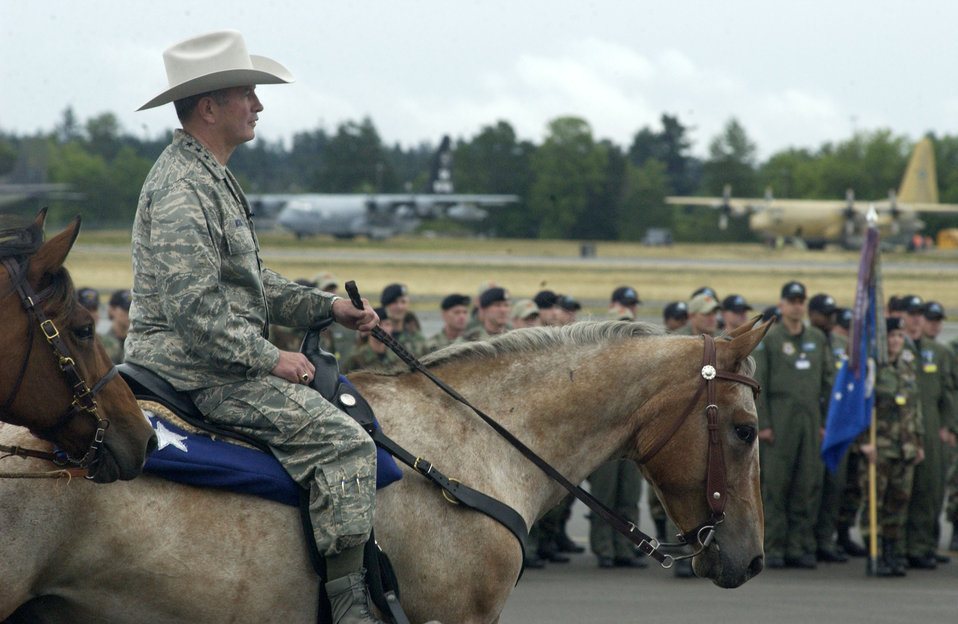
AMC commander shares passion for Rodeo

Gen. Duncan J. McNabb rides into the Air Mobility Command Rodeo 2007 opening ceremony July 22 at McChord Air Force Base, Wash. Rodeo 2007 is an international mobility air forces readiness competition designed to improve technical abilities through approximately 25 evaluated events on the ground and in the air. General McNabb is the AMC commander.